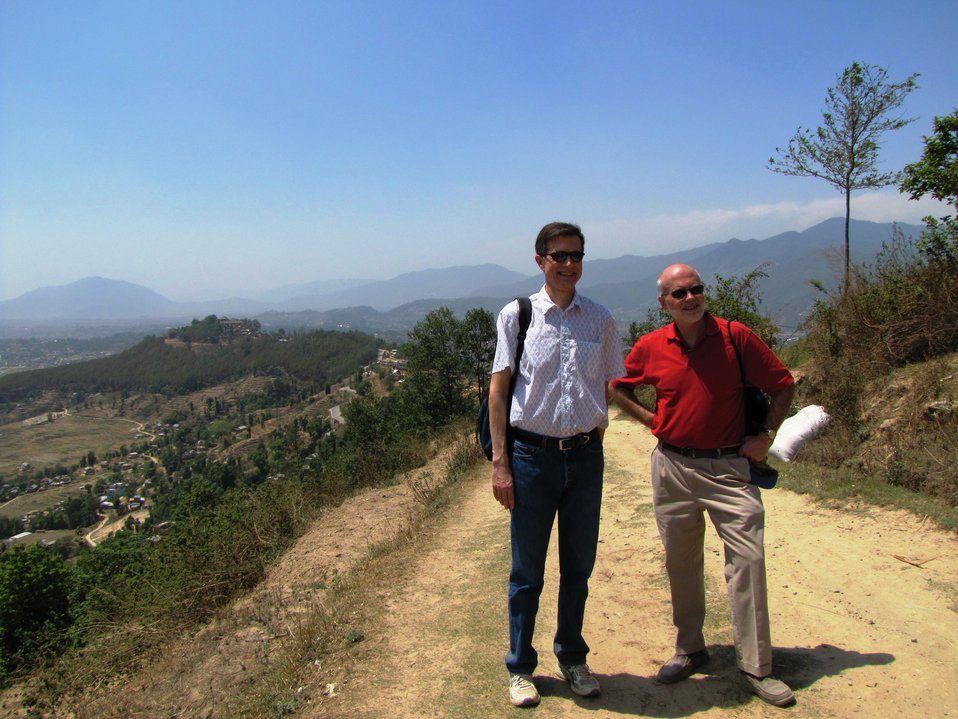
Assistant Secretary Blake and Ambassador DeLisi Stand Above Kathmandu, Nepal

Assistant Secretary Blake and U.S. Ambassador to Nepal Scott H. DeLisi stand above Kathmandu, Nepal, on April 25, 2010.